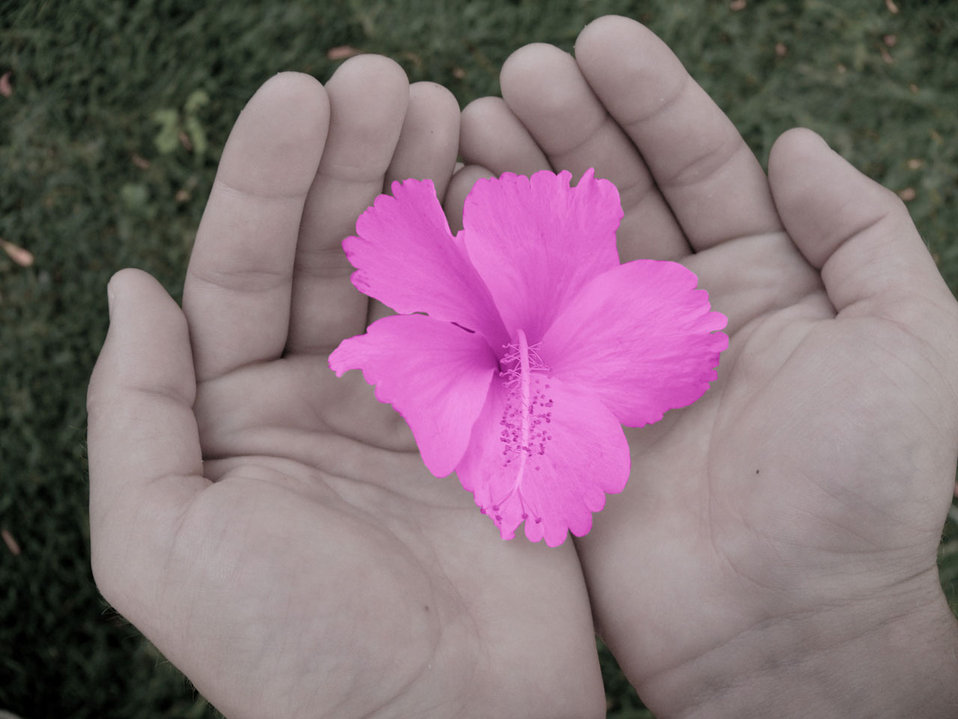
Flower in hands

Pink flower in hands.